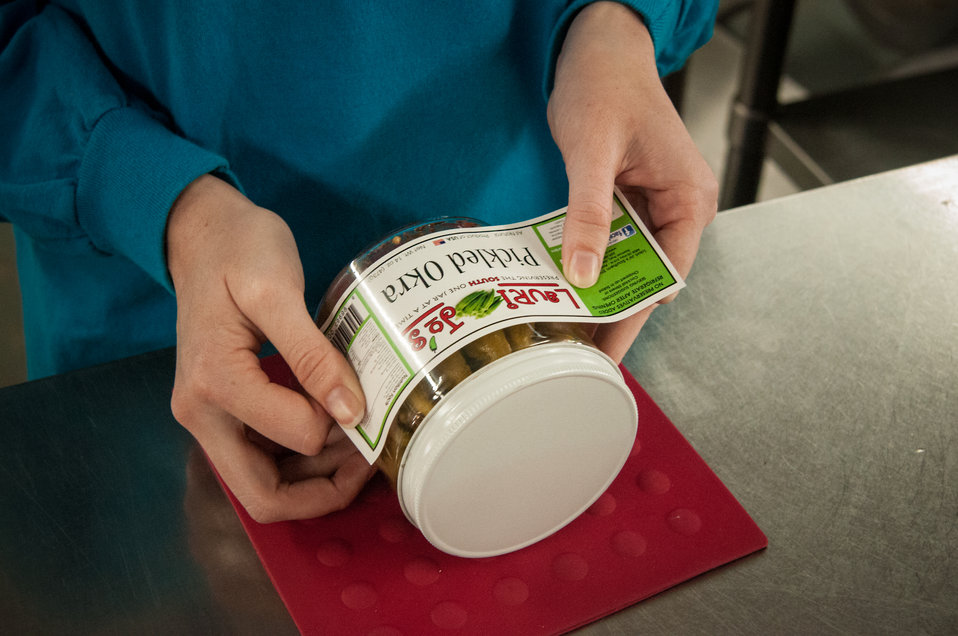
Laurie Jo’s Southern Style Canning business owner’s daughter Mikelyn Bennett applies labels to pickled okra packaged at her mother’s business in Norman Park, Colquitt County, GA on Mar. 7, 2013. Laurie Jo Bennett was able to secure a U.S. Department of Agriculture (USDA) Rural Development (RD) Rural Business Enterprise Grant (RBEG) to help market her products. Bennett has increased her business’s production to 12 items that now includes pickled green tomatoes, pickled okra, pickled asparagus pickled green beans, red and green pepper jellies, pineapple pepper jelly salsa and pepper sauce. Consumers may now purchase Lauri Jo’s Southern Style Canning Line in Whole Foods, Earth Fare and Kroger stores across 20 states. The grant from USDA has enable Lauri Jo to employ 26 people. The USDA Strike Force Initiative has designated Colquitt County, GA as a Strike Force county selected to receive assistance to relieve persistent poverty in historically high-poverty counties.